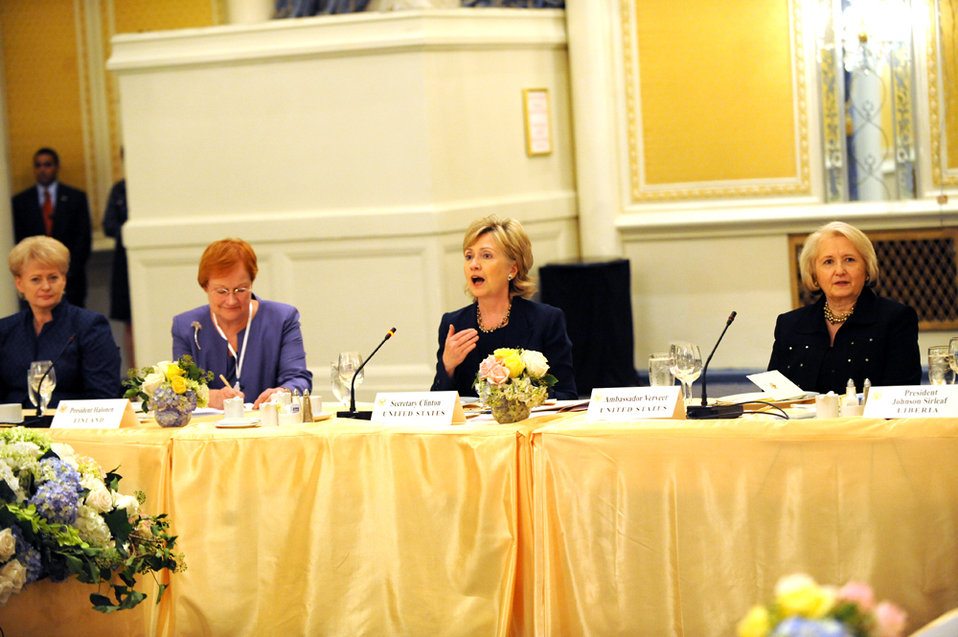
UNGA 2009: Secretary Clinton Holds Women Heads of State and Foreign Ministers Luncheon

U.S. Secretary of State Hillary Rodham Clinton participates in a lunch with women Heads of State and Foreign Minsters at the Waldorf Astoria hotel during the 64th Session of the UN General Assembly in New York City, New York September 24, 2009.